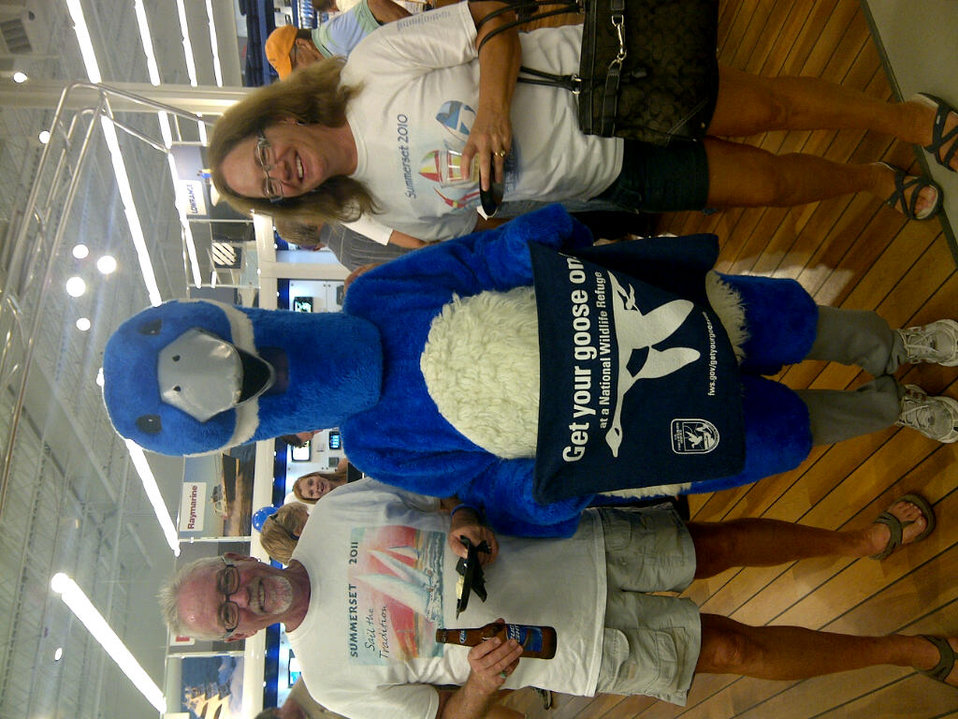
Get Your Goose On!